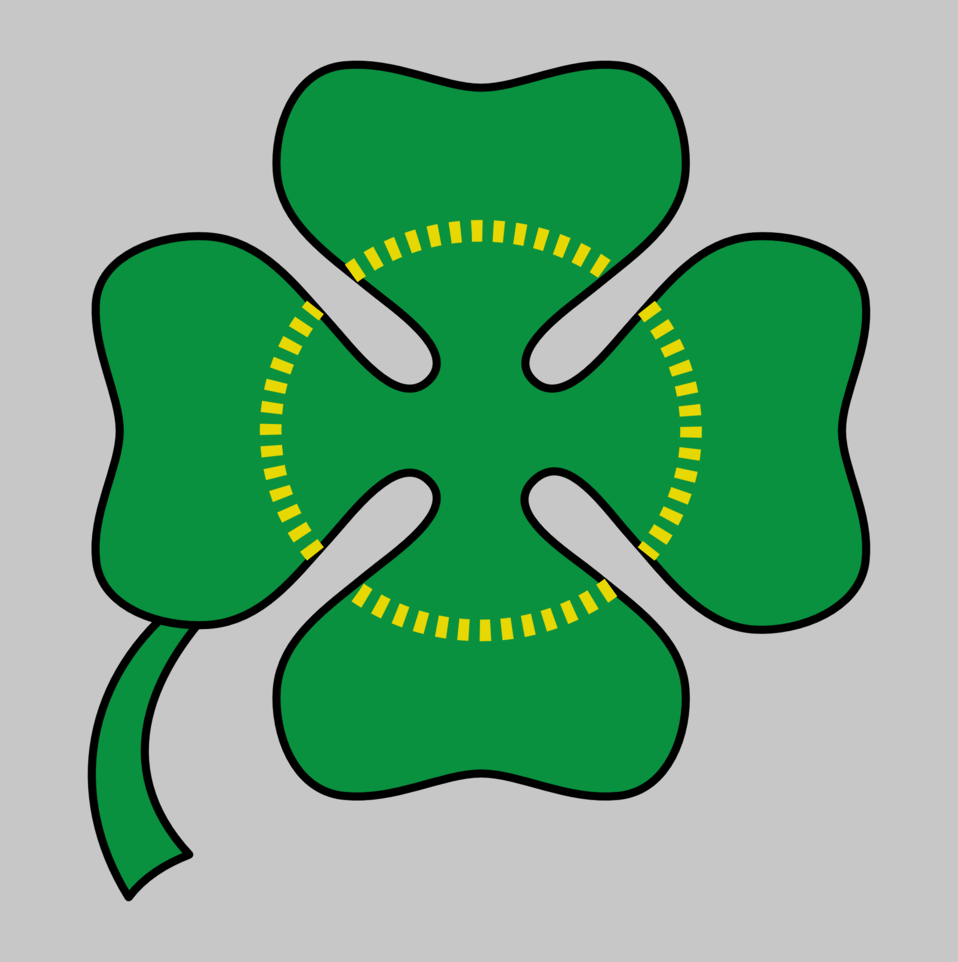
Italiano: Il 'Quadrifoglio' riproduce il simbolo della '10ª Squadriglia da bombardamento Caproni'.